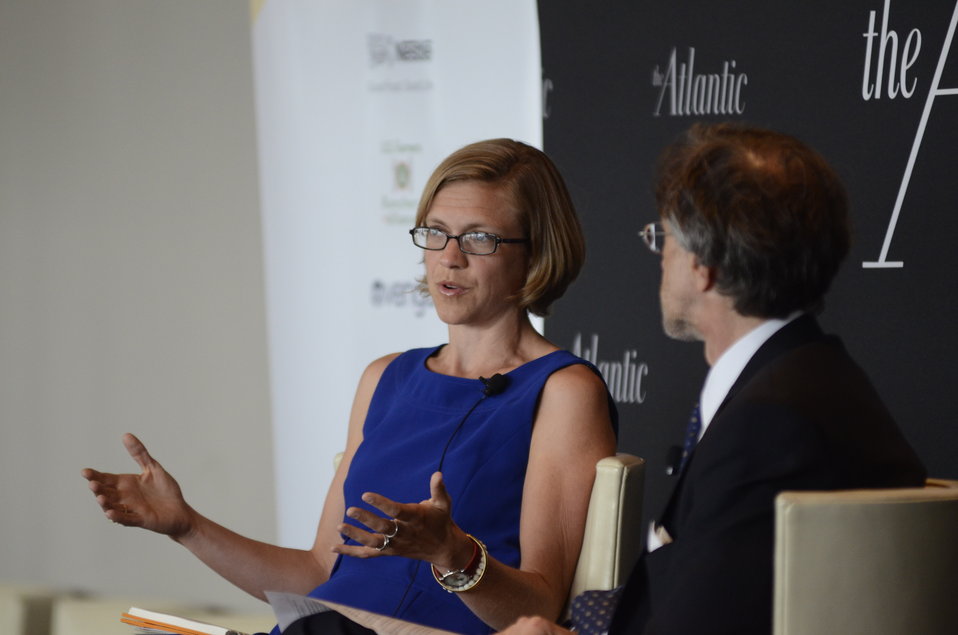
The Atlantic Senior Editor Corby Kummer interviews Co-Founder and Chief Innovation Officer, Revolution Foods Kirsten Tobey Batali at the 3rd Annual Food Summit held at the W Hotel in Washington, D.C. on Thursday, May 24, 2012. The Food Summit event includes interviews, panel discussions and symposia with leading authorities on issues related to food, food security, and nutrition.